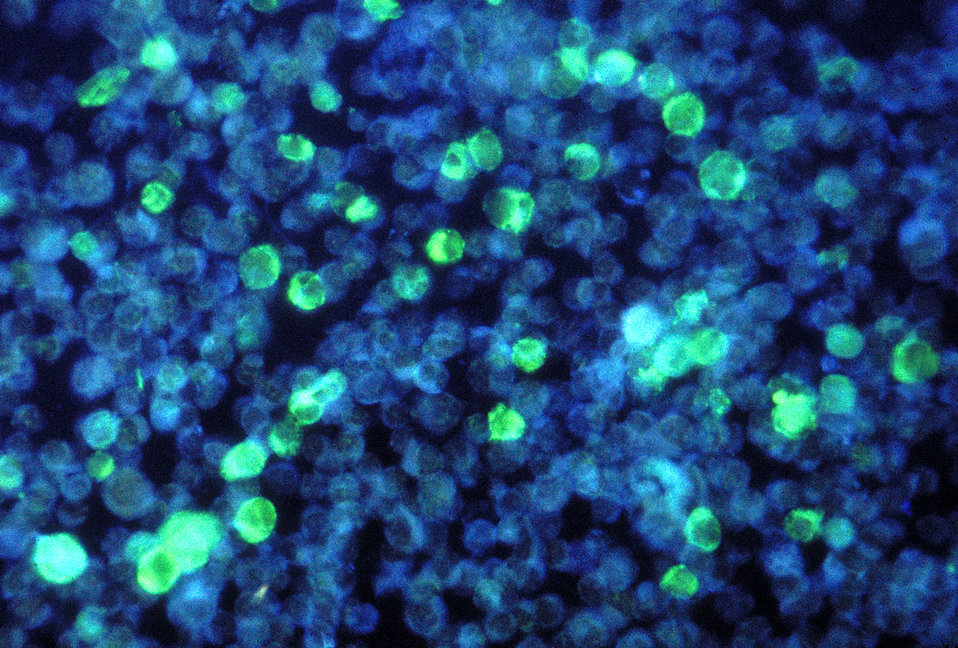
This photomicrograph depicts leukemia cells that contain Epstein Barr virus using a FA staining technique.